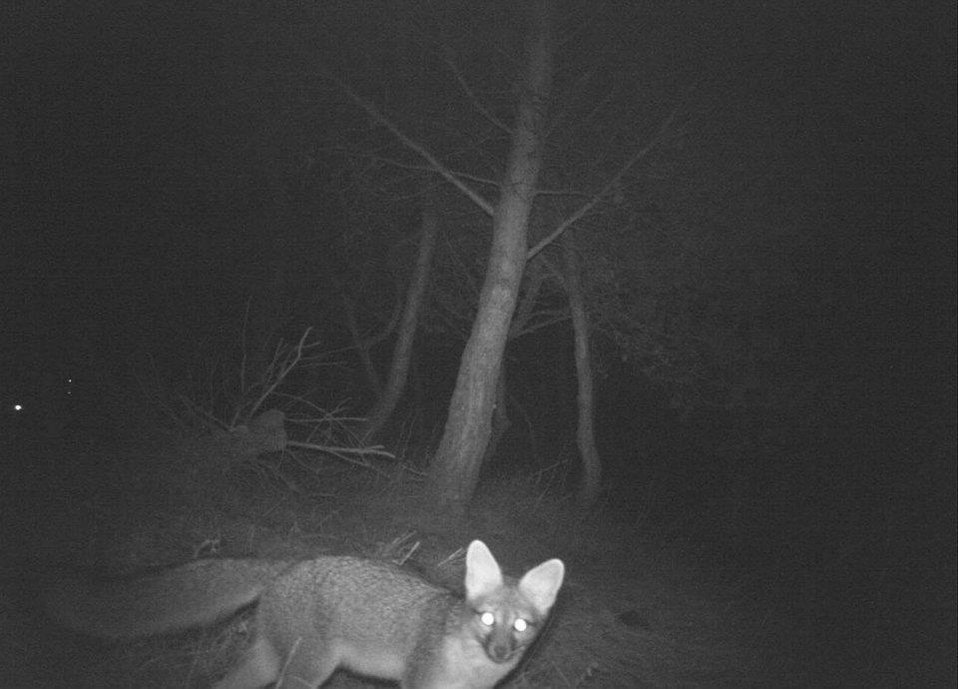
gray fox

Don Edwards San Francisco Bay National Wildlife Refuge, CA
Camera trap photo: Bryan White, USFWS